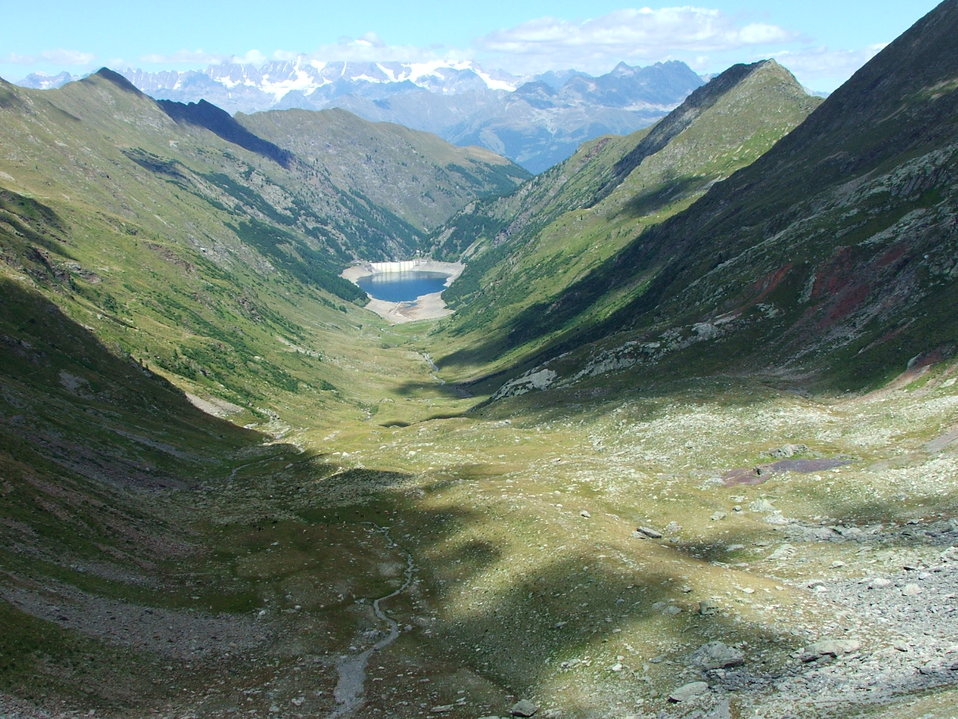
Italiano: Foto della Val Venina, di Orobicon